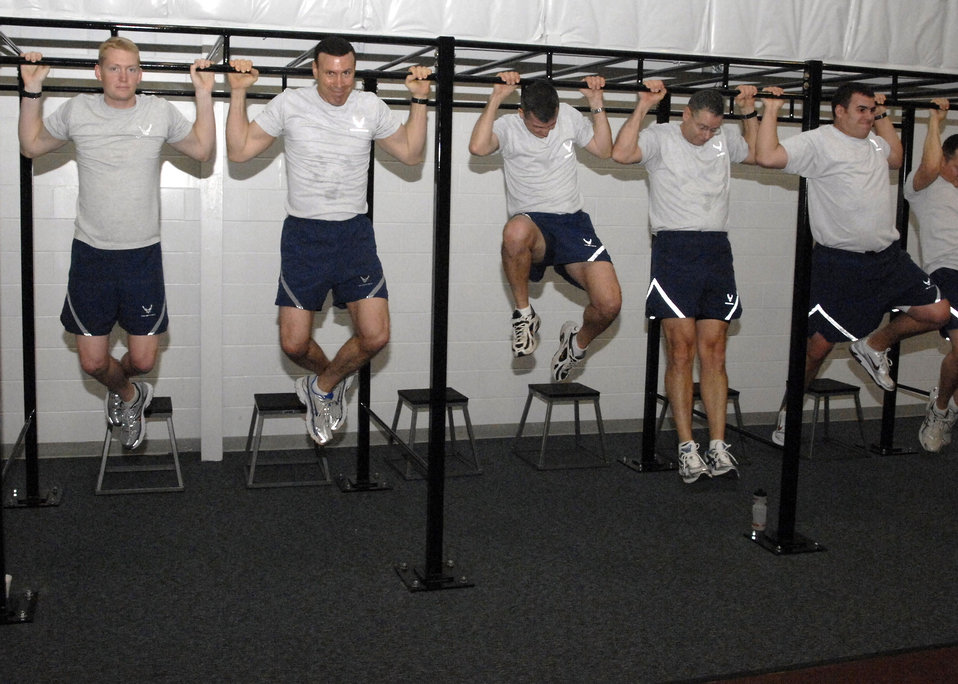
Andrews officials launch tactical fitness center

Airmen give their best during the inaugural exercise session Jan. 15 at the new Tactical Fitness Center at Andrews Air Force Base, Md. Staff members at the center focus on programs that build the core strength and endurance that are fundamental to a superior level of combat fitness, both as individuals and as team members.